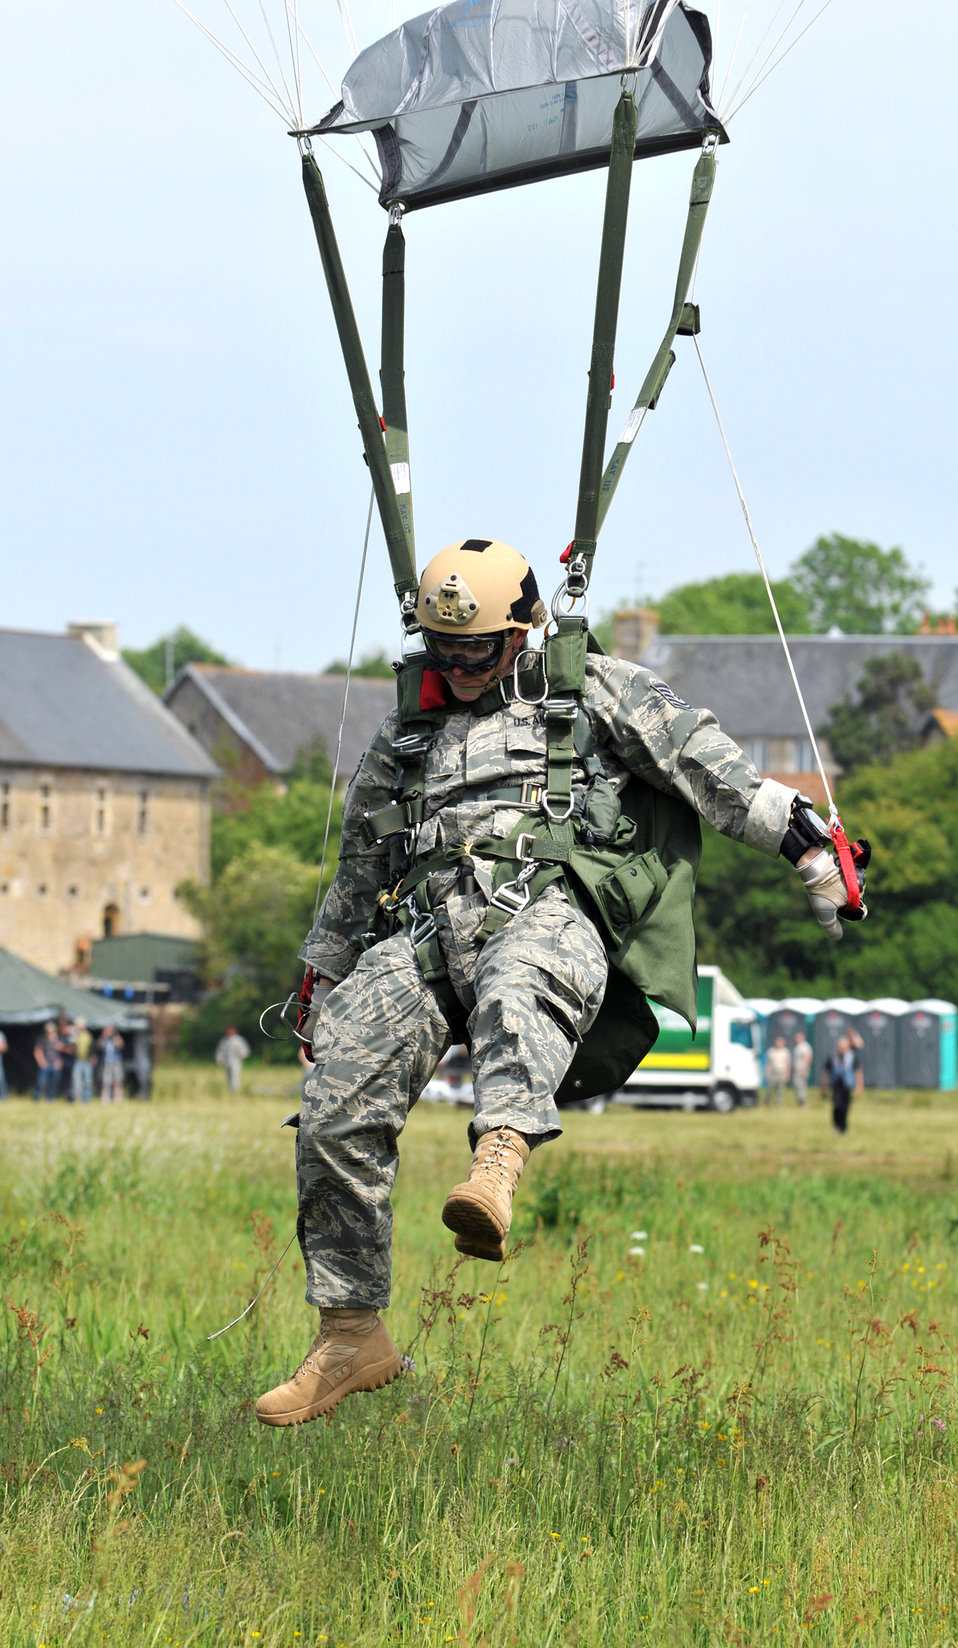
Airmen commemorate D-Day

A member of the 321st Special Tactics Squadron lands June 5, 2010, in the